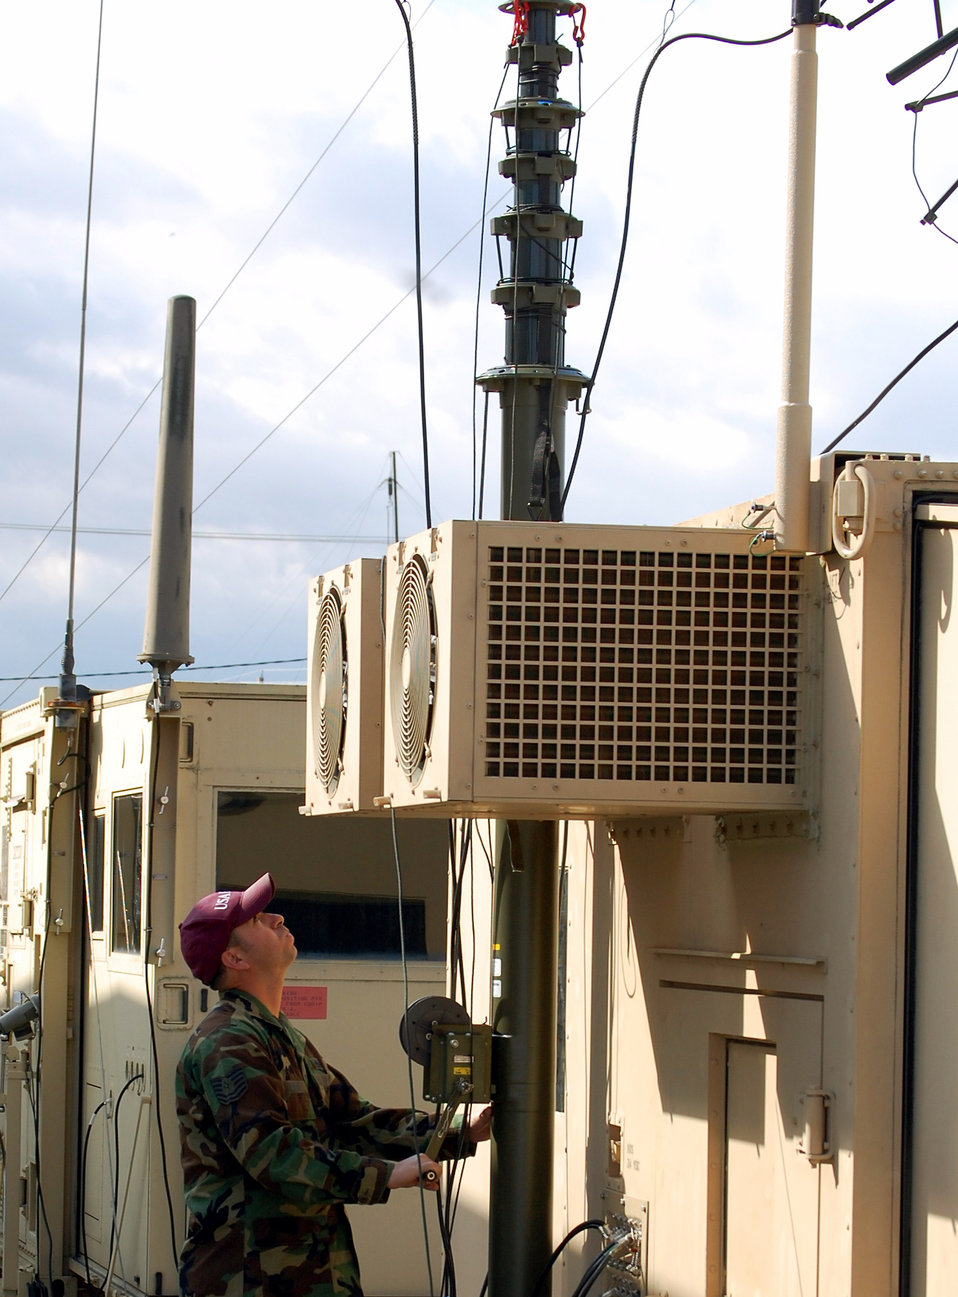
Newest mobile air shelter set up for training

Tech. Sgt. Don Colbert works on adjusting an antenna on the Hard-sided Expandable Lightweight Air Mobile Shelter in the Mobility Operations School's Mobile C3 training facility Oct. 29 at Fort Dix, N.J. Sergeant Colbert is a course director for the U.S. Air Force Expeditionary Center's Mobile Command, Control and Communications Systems Course.